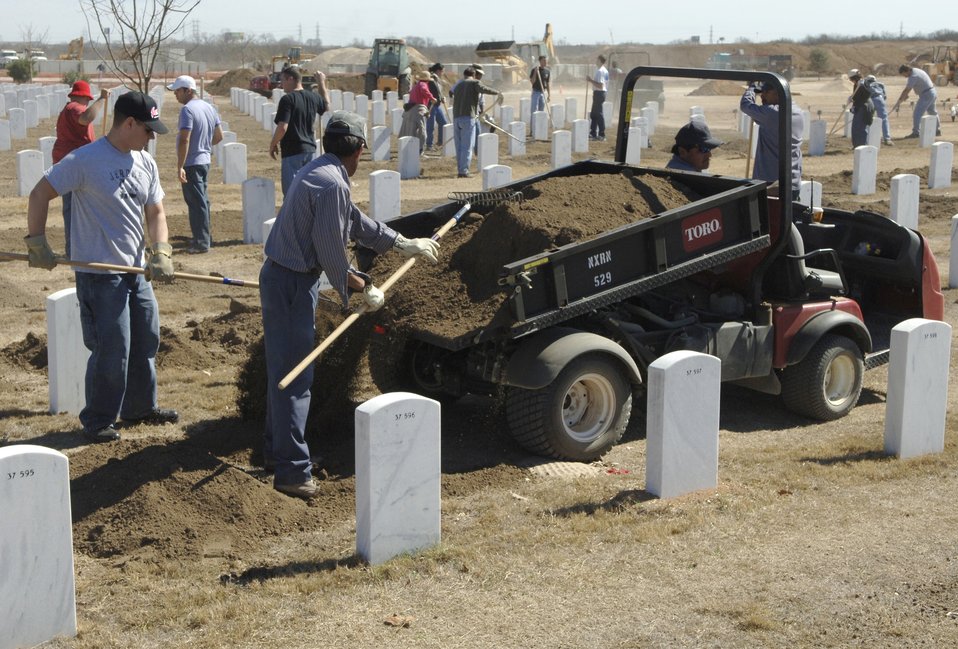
An honorable task

FORT SAM HOUSTON, Texas (AFPN) -- Ninety-three members of the Cryptologic Systems Group at Lackland Air Force Base, Texas, team with cemetery employees to landscape and straighten headstones at Fort Sam Houston National Cemetery Feb. 8.